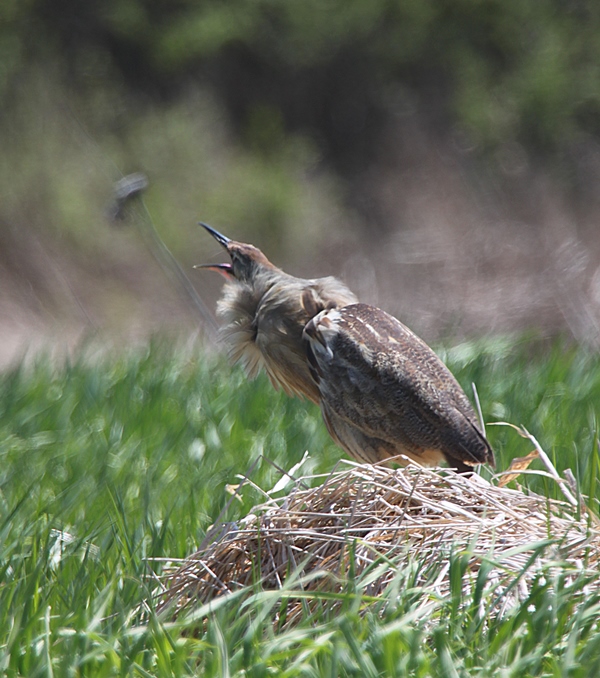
calling American bittern

Bittern at MNWR
Photo Credit: Ken Sturm; USFWS